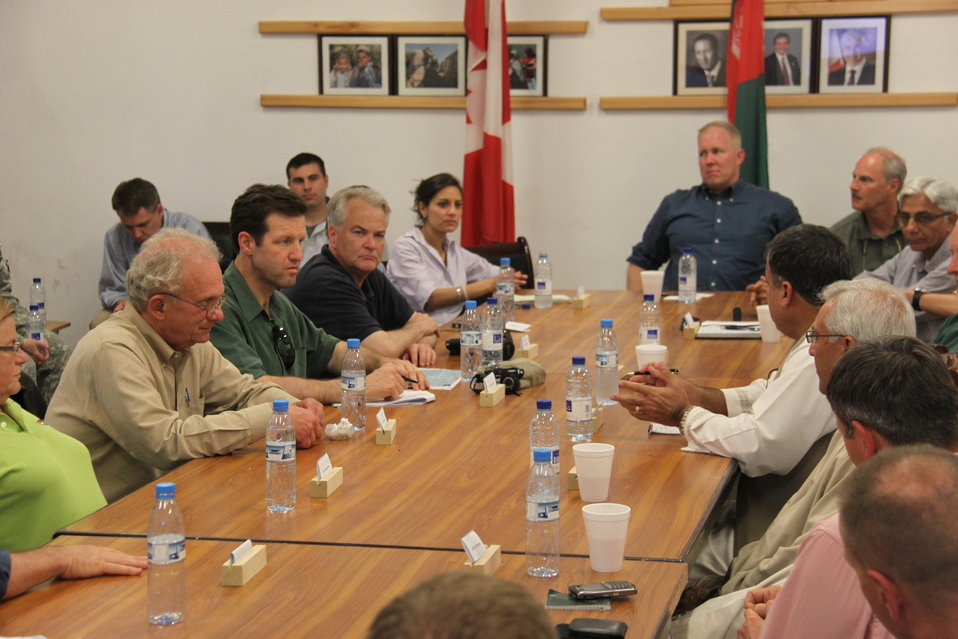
Meeting with Local Leaders in Kandahar